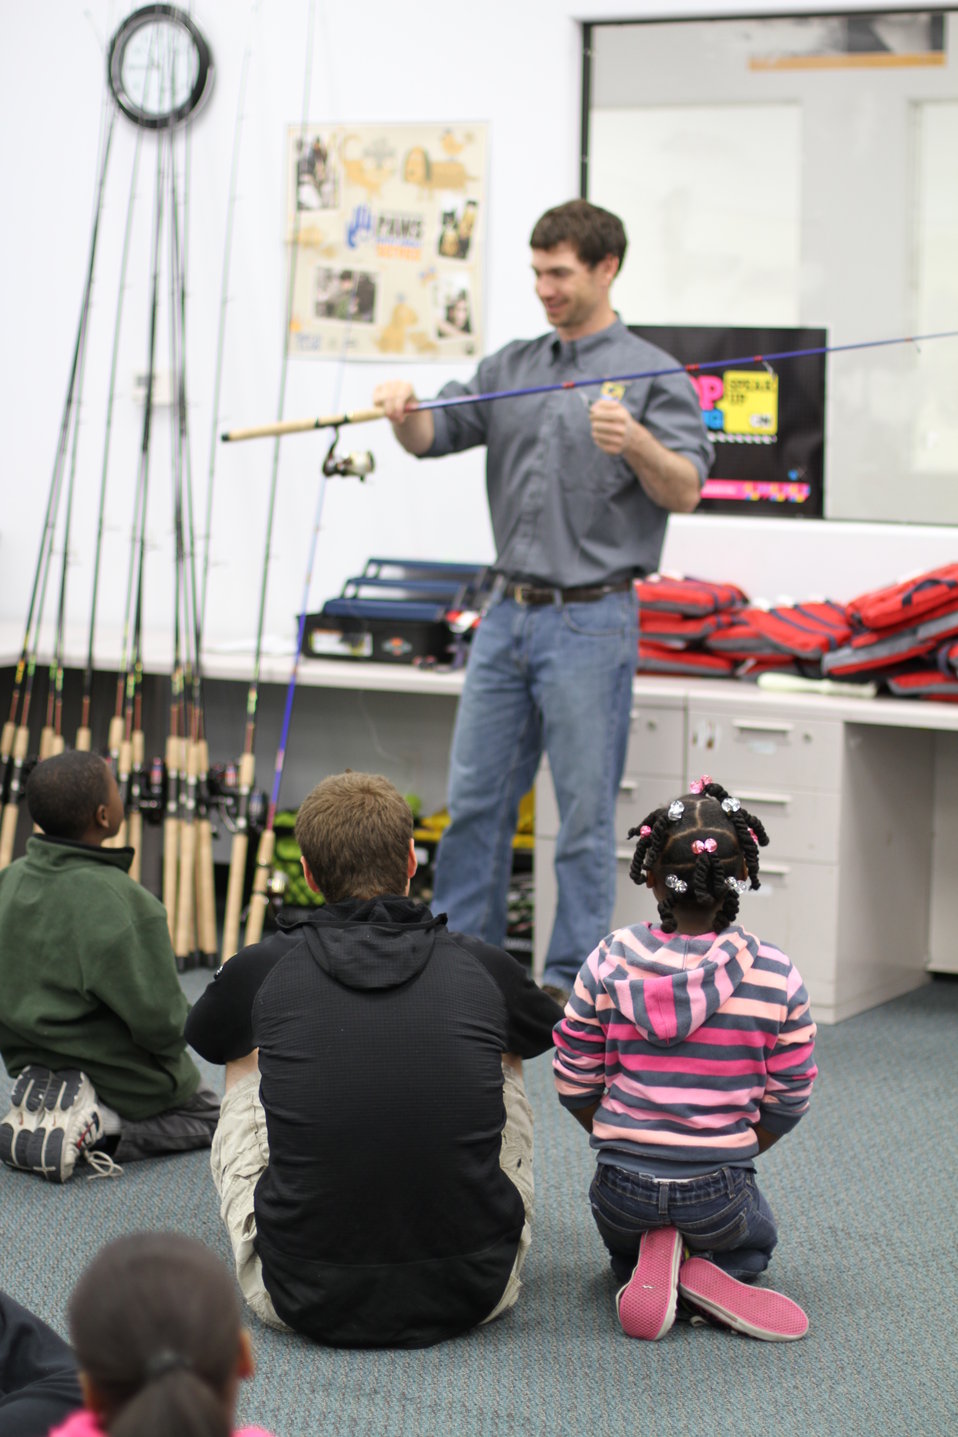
2012-Anchorage-Play

Casting lesson
Muldoon Boys and Girls Club youth got classroom prep before heading down to Ship Creek in Anchorage to catch salmon. This project is a product of a partnership between
the Club, USFWS, Alaska Department of Fish and Game, Alaska Department of Natural Resources, and support from the National Conservation Training Center's Connecting People With Nature funding initiative. USFWS/Katrina Mueller